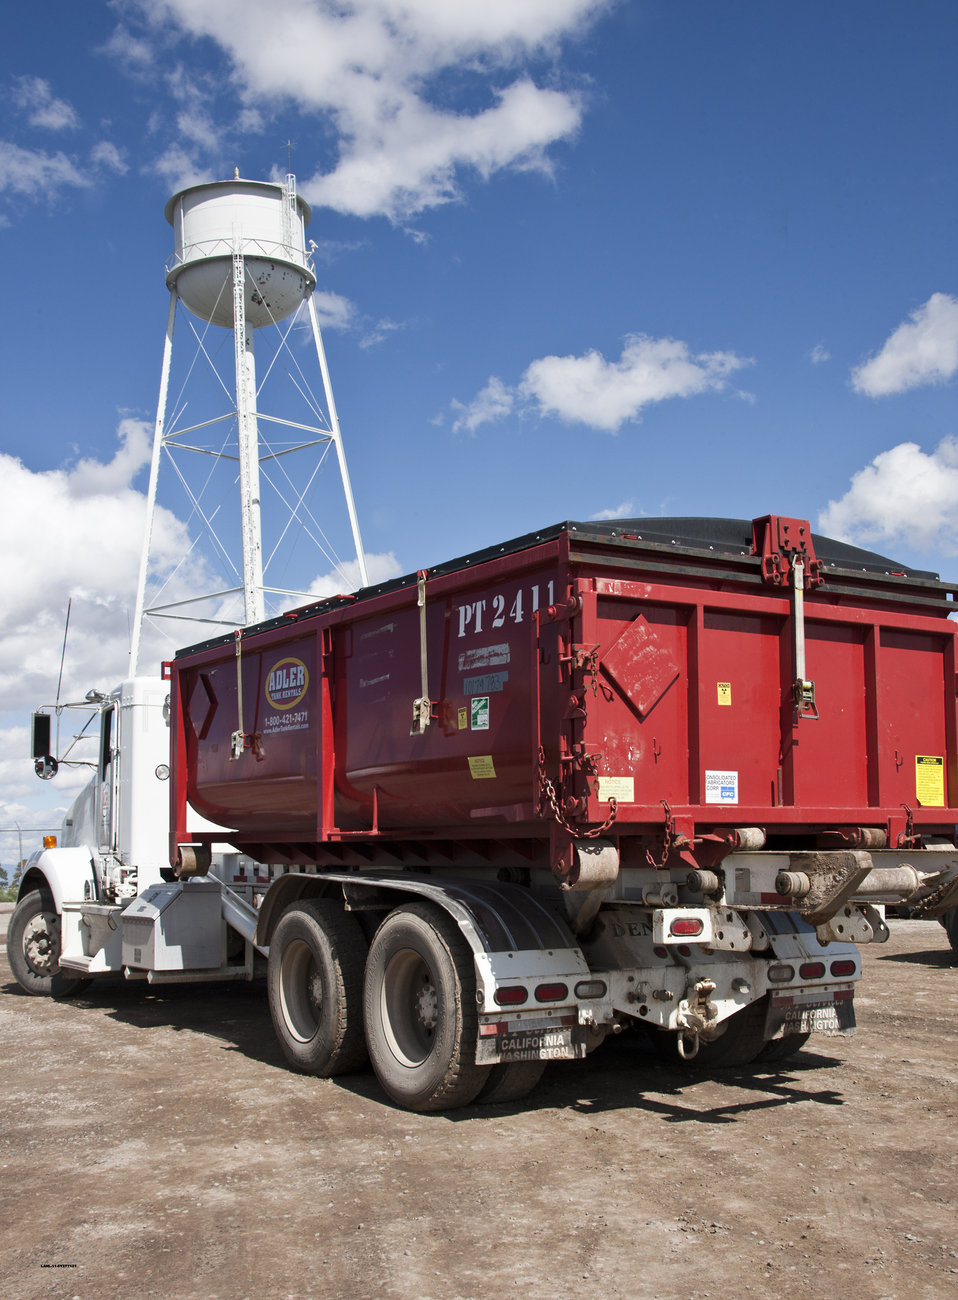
Los Alamos photo